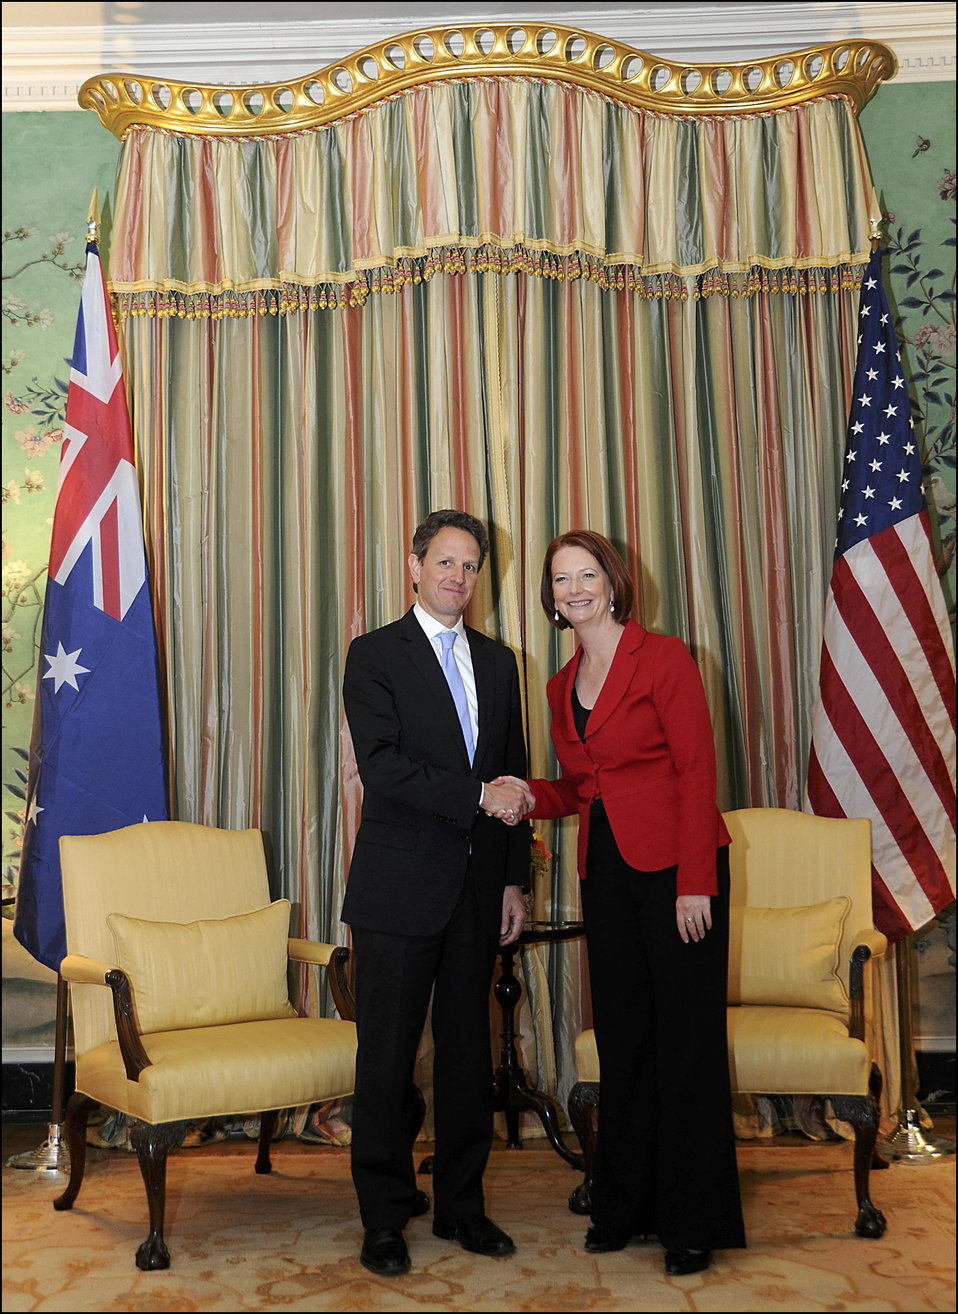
Australian Prime Minister Julia Gillard

On March 7, 2011, Secretary Geithner met with Australian Prime Minister Julia Gillard at Blair House in Washington, D.C.